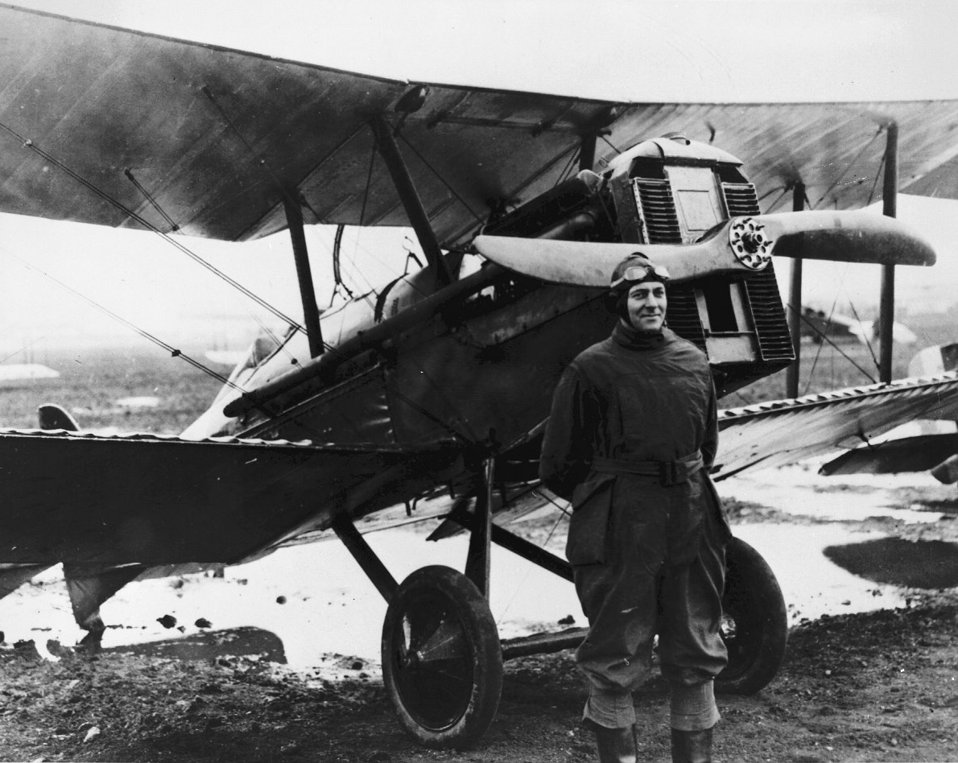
Horace Hickam

Lt. Col. Horace Hickam stands by a British SE-5. Hickam Air Force Base was named for Colonel Hickam May 31, 1935. The colonel was killed in a plane crash Nov. 5, 1934.